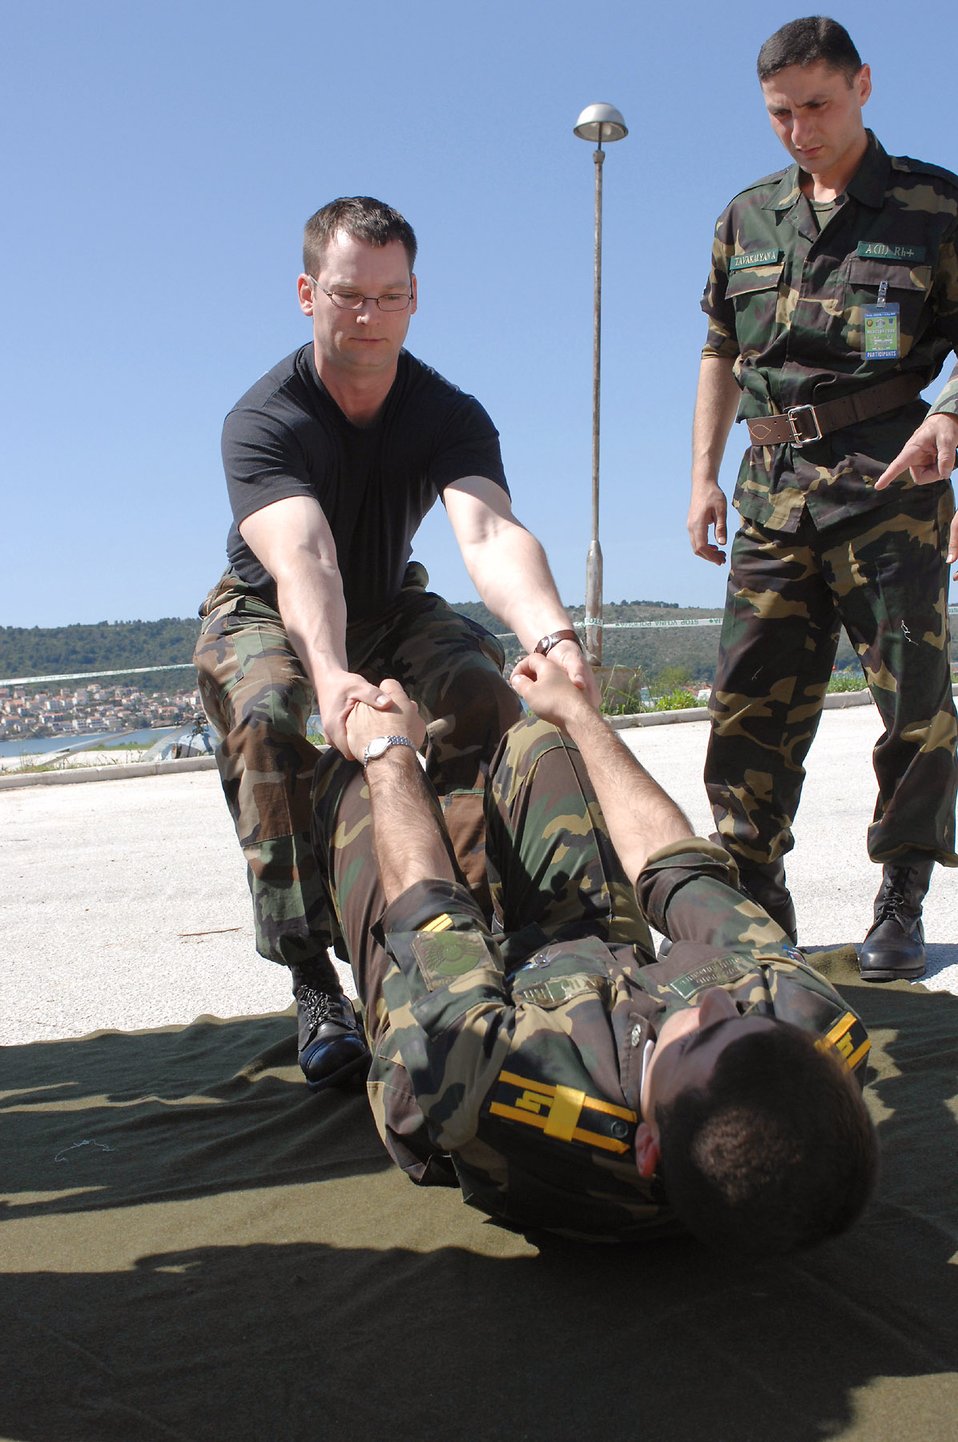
Medical training exercise supports partnership for peace

Staff Sgt. Timothy Nagowski demonstrates the fireman's carry May 3 for cadets from the Military Medicine Faculty of the Armenian Medical University during the 2008 Medical Training Exercise in Central and Eastern Europe. MEDCEUR is a Joint Chiefs of Staff regional/multilateral exercise sponsored by U.S. European Command and will run now through May 14. Croatia is hosting the 2008 exercise which has drawn about 400 multi-nationals in support of the Partnership for Peace initiative. The exercise focuses on mass-casualty training scenarios and humanitarian aid in response to crises situations. Sergeant Nagowski is with the 458th Expeditionary Medical Squadron.